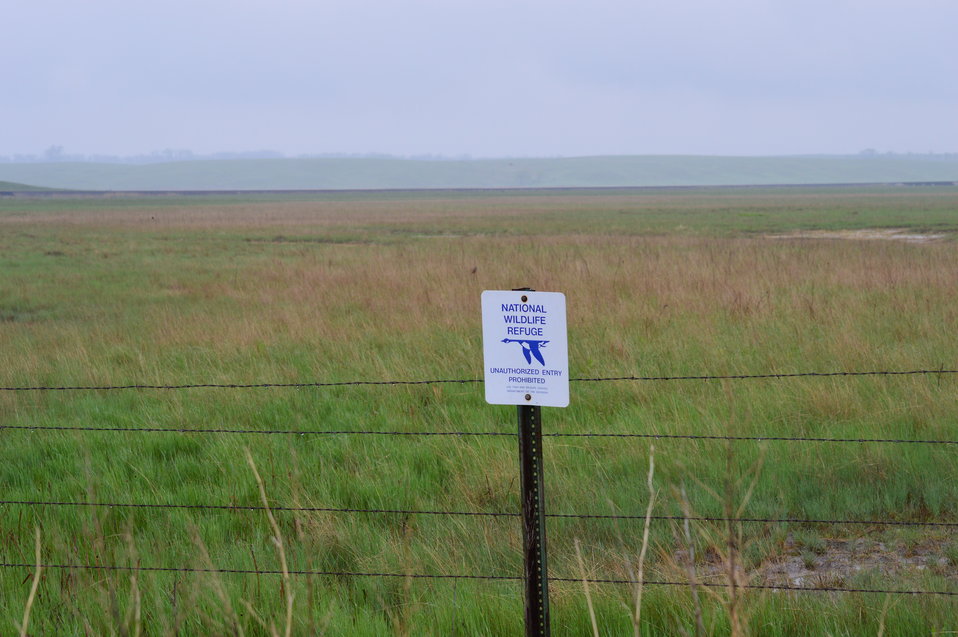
NWR sign

Scenery and wildlife at Lost Lake National Wildlife Refuge in North Dakota.